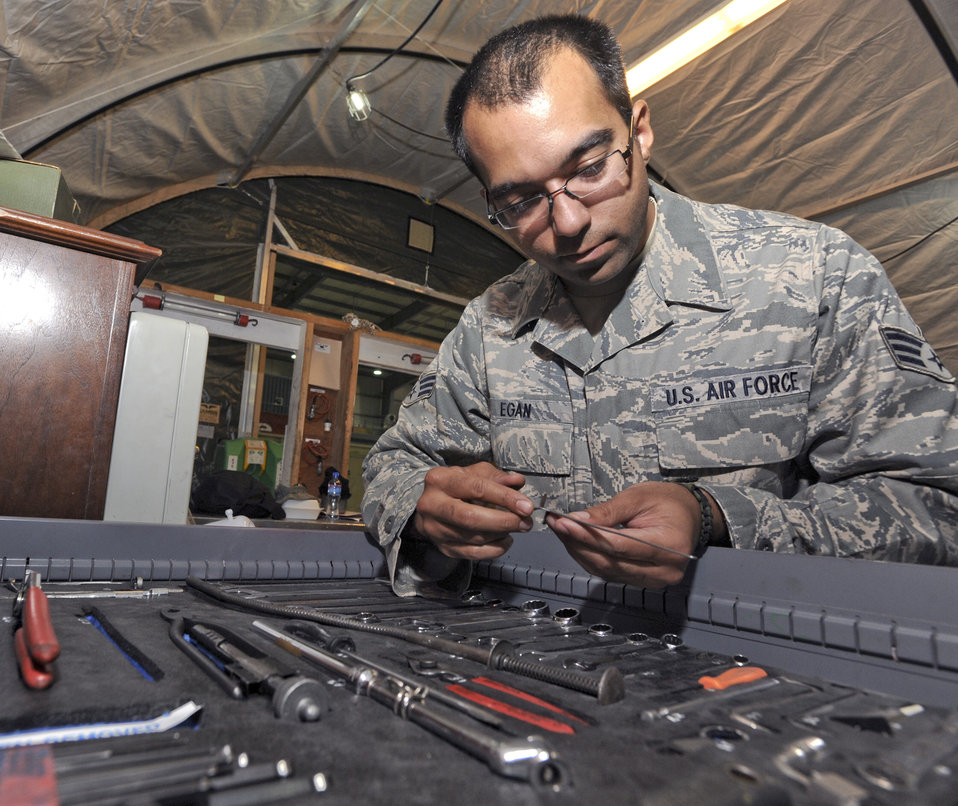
Airmen keep Hercules strong

Senior Airman Fred Egan performs a daily tool inventory inspection April 20 at an air base in Southwest Asia. All tools are inspected within the tool shed prior to a shift change to ensure accountability. Airman Egan is a 746th Aircraft Maintenance Unit avionics technician. He hails from North Vernon, Ind., and is deployed from Youngstown Air Reserve Station, Ohio.